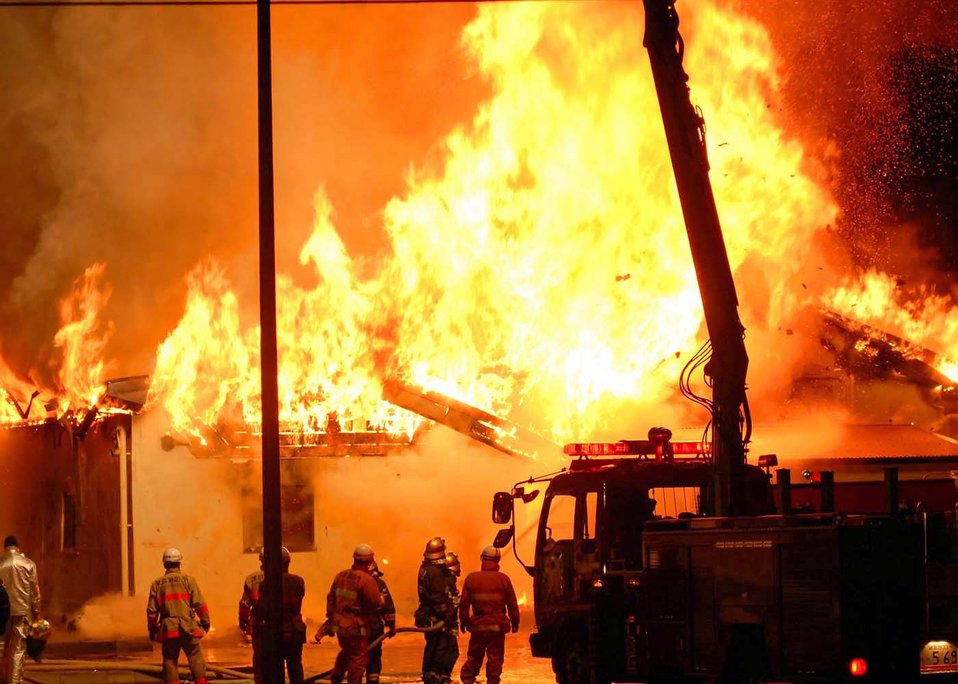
Yokota, Japanese firefighters dowse base fire

Firefighters from the 374th Civil Engineer Squadron and the Tokyo Metropolitan Fire Department work together to fight a fire at the Defense Finance and Accounting Service Japan building that caught fire at about 6:30 p.m. Jan. 20 at Yokota Air Base, Japan.